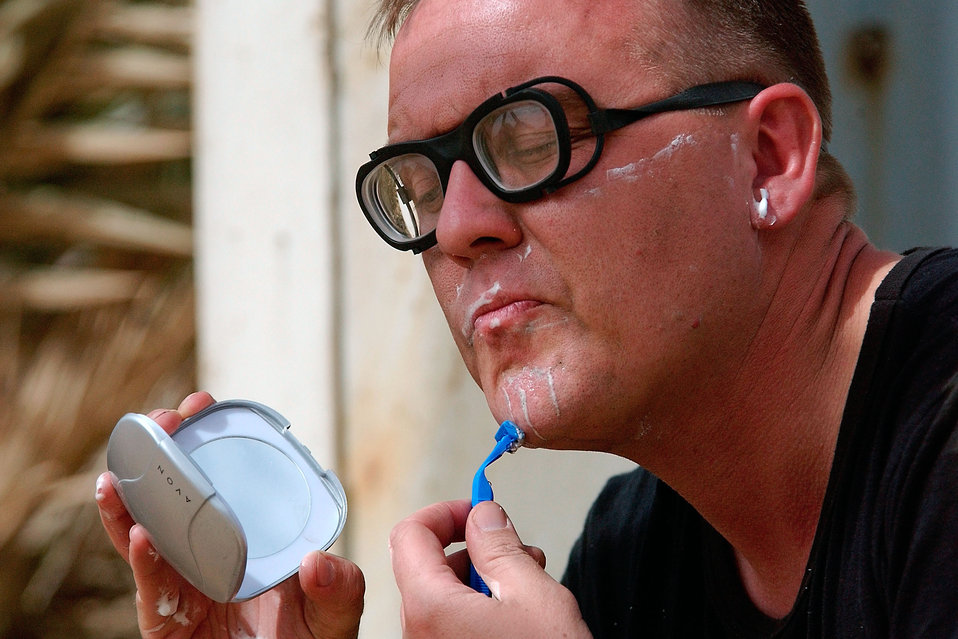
Clean shave

OPERATION IRAQI FREEDOM -- Senior Master Sgt. Paul Maynard, Aerial Port Superintendent with the 821st Air Mobility Squadron from McGuire Air Force Base, N.J., shaves before work at an undisclosed Operation Iraqi Freedom forward deployed location. Maynard is deployed with the 621st Tanker Airlift Control Element in support of Operation Iraqi Freedom.